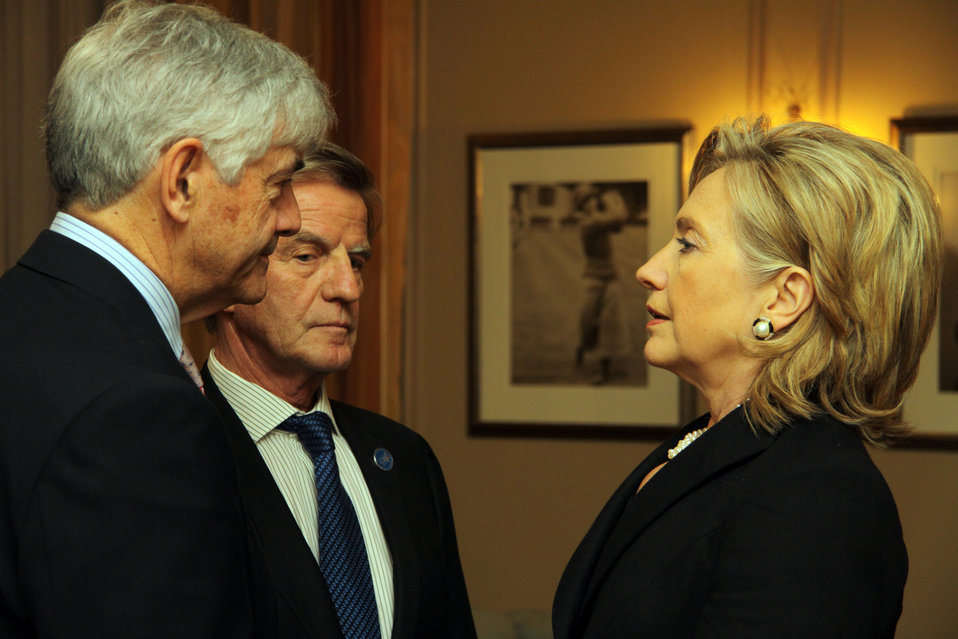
Secretary Clinton Speaks With Canadian, French Foreign Ministers

U.S. Secretary of State Hillary Rodham Clinton speaks with remarks with Canadian Minister of Foreign Affairs Lawrence Cannon (left) and and French Foreign Minister Bernard Kouchner (center) during the G8 Foreign Ministers Meeting in Ottawa, Canada March 29, 2010.